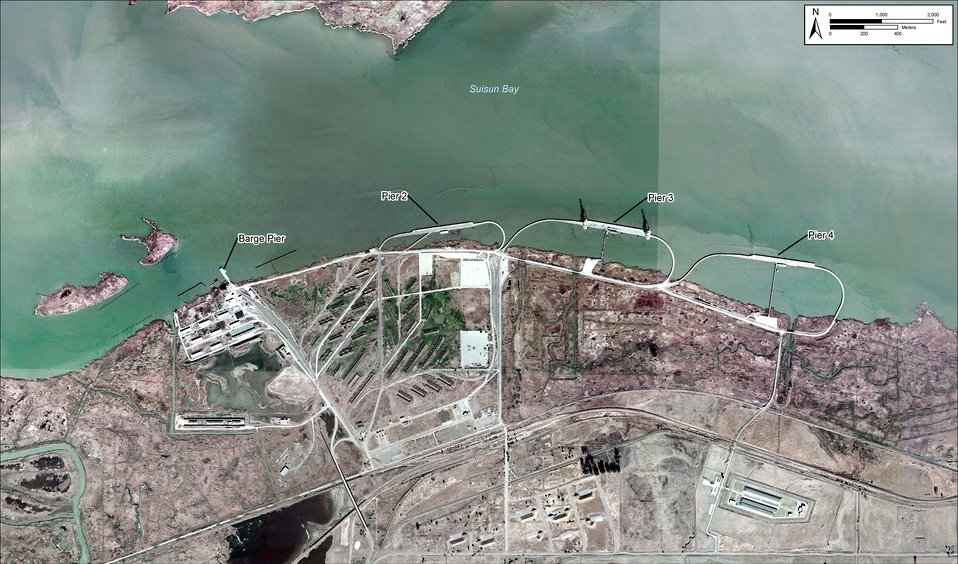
Aerial image of the Military Ocean Terminal Concord piers

An aerial image shows the Military Ocean Terminal Concord piers in Concord, Calif. The U.S. Army Corps of Engineers Sacramento District and the Department of the Army are developing plans to safely modernize Pier 2 and/or Pier 3 on MOTCO. Pier 2 has been inoperable for the past five years and is a key component for the terminal, which represents nearly 25 percent of the nation’s total ammunition shipping capability. The district is gathering public input to determine the best approach to modernize the piers, and hopes to outline that plan in the final environmental impact statement expected fall 2014 with possible construction tentatively scheduled in 2016.